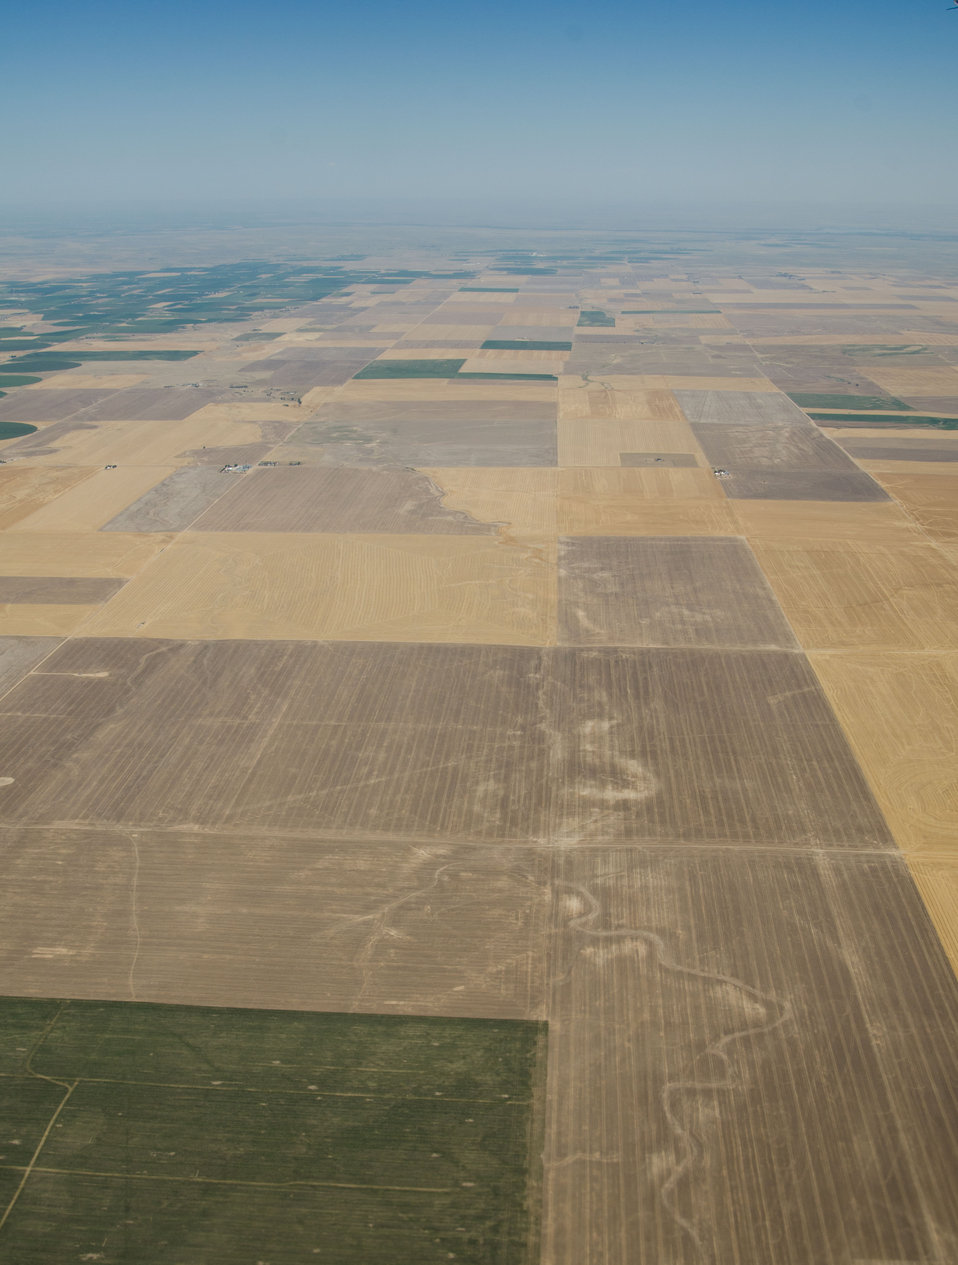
Aerial views of drought affected Colorado farm lands, 80 miles east of Denver, Colorado on Saturday, July 21, 2012.